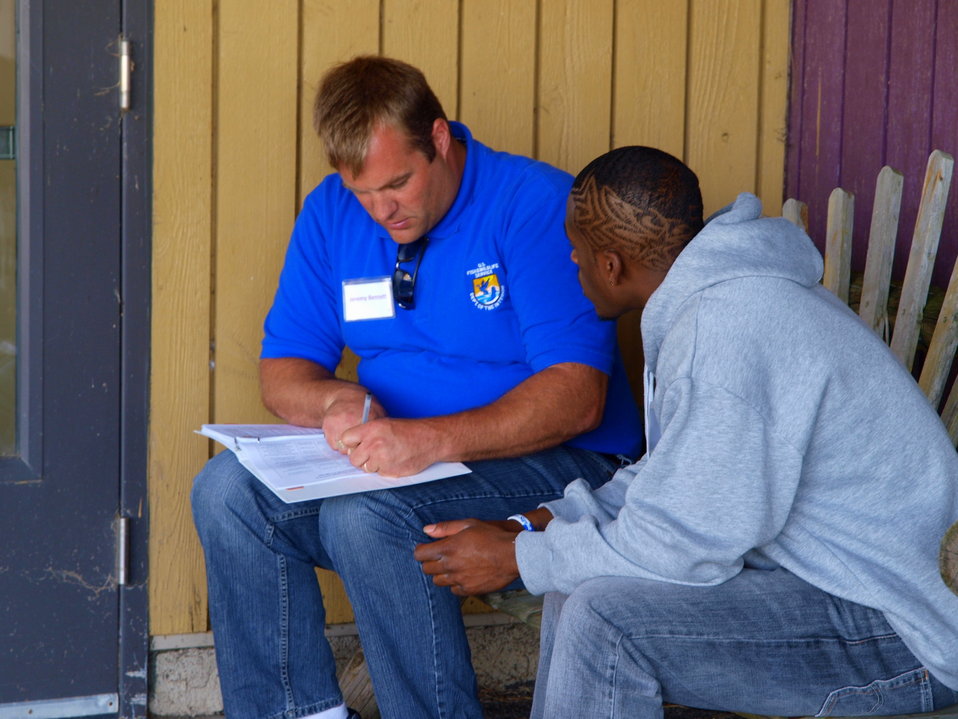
CDIP 2012 Fergus Falls

Jeremy and mentee - Brandon